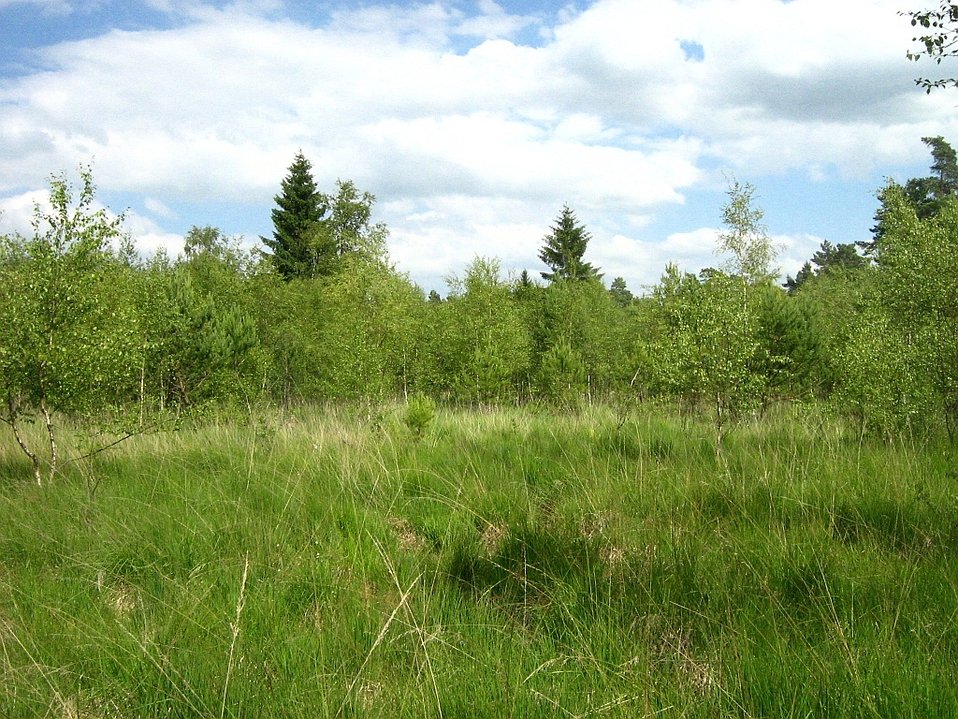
Deutsch: Das Dänschenburger Moor ist eines der größten Hochmoore Norddeutschlands. Durch Wasserabsenkung ist das Moor inzwischen fast vollständig mit Kiefern und Birken bewaldet.
(NSG „Großes Moor bei Dänschenburg“ N21, 71 ha, Gemeindegebiet der Stadt Marlow, Landkreis Nordvorpommern, Mecklenburg) Camera location 54° 07′ 46.12″ N, 12° 26′ 27.49″ E View this and other nearby images on: OpenStreetMap - Google Maps - Google Earth 54.129478; 12.440969